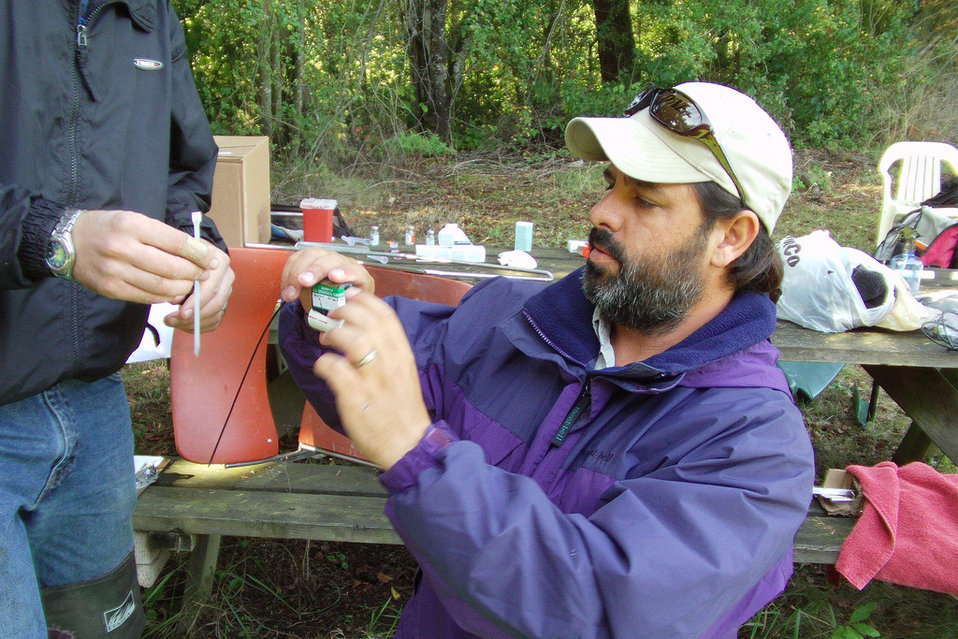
A Nutria Tag is Prepared

Biologists prepare a tag for a nutria. The animals are trapped in order to tag them to better understand the habits of nutria and preventing their spreading.